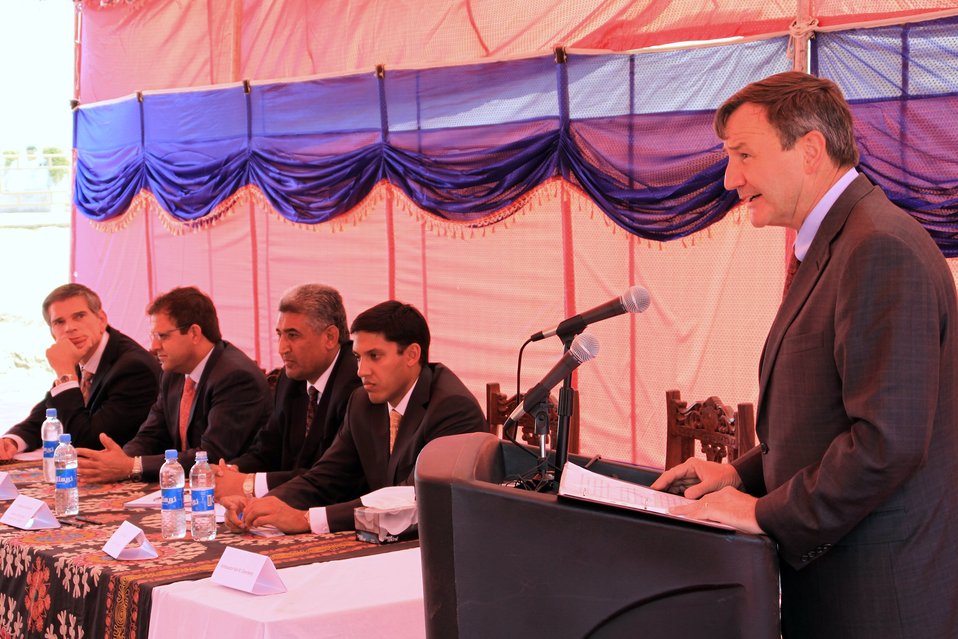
Badam Bagh Farm